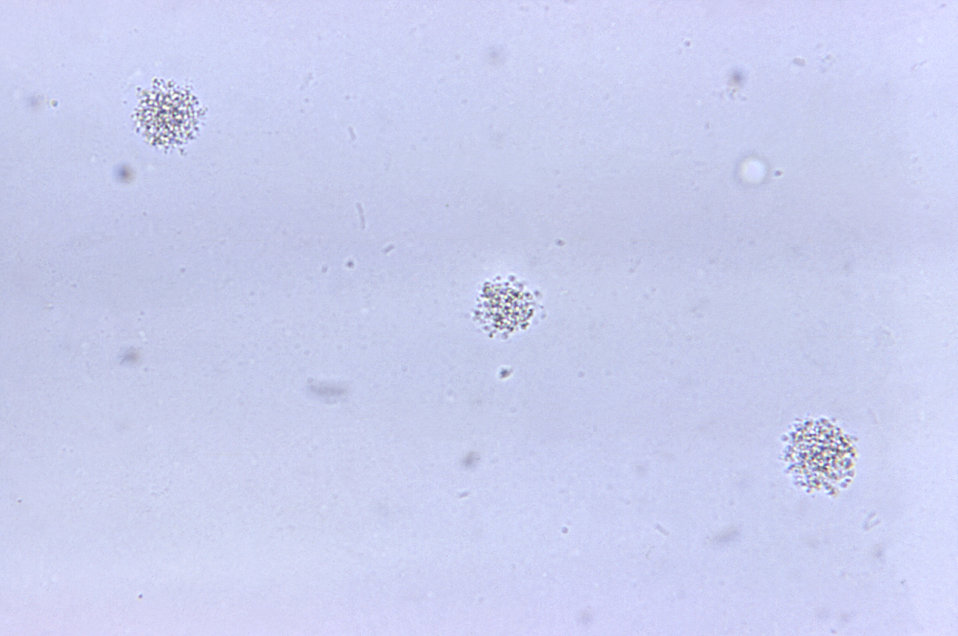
Magnified 500X, four times greater than PHIL 10930, this photograph revealed some of the morphologic features exhibited by a number of medium-sized Ureaplasm urealyticum colonies, otherwise known as T-strain mycoplasma. These organisms produced heavy growth on 1ml agar.